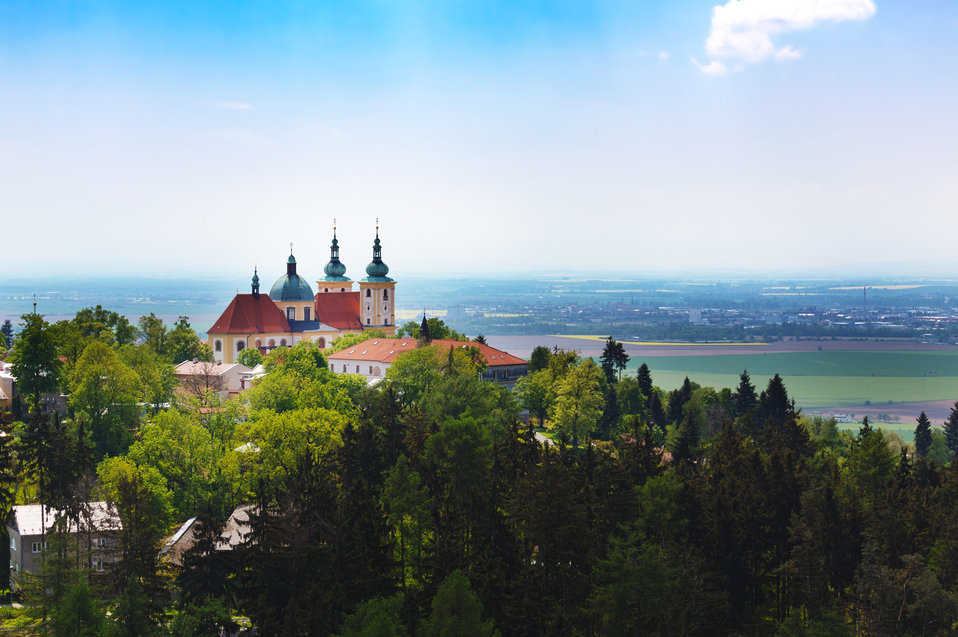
Little castle on the hill

A little castle at svaty kopecek in olomouc in the czech republic.